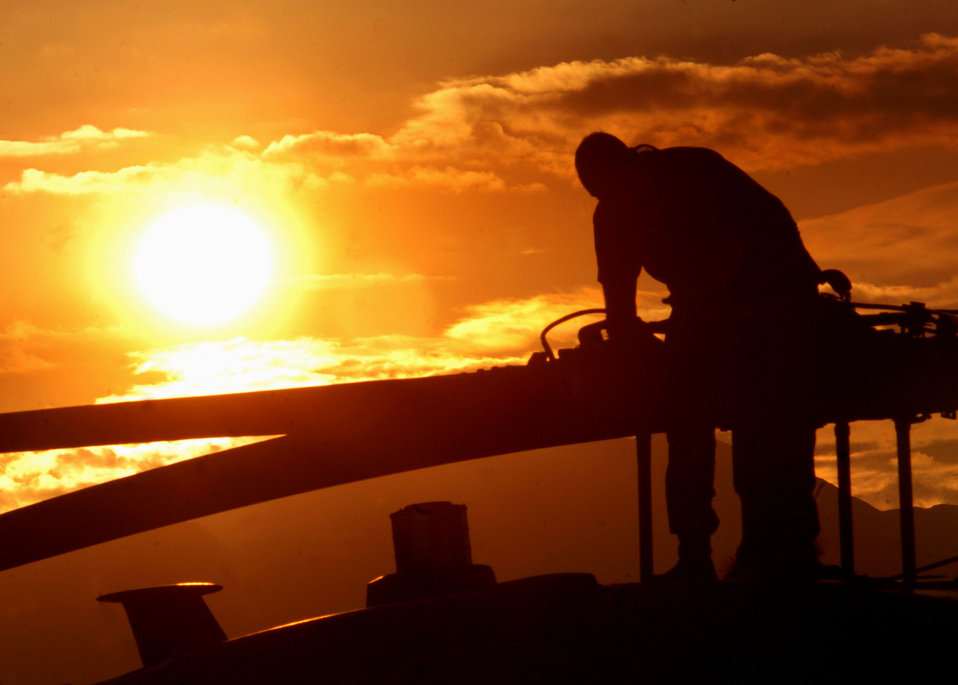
After the mission

CLARK AIRFIELD, Philippines -- Staff Sgt. Eric Croughwell inspects his helicopter after returning from a mission here Dec. 16. Sergeant Croughwell is an HH-60 Pave Hawk helicopter crew chief assigned to the 718th Aircraft Maintenance Squadron at Kadena Air Base, Japan.